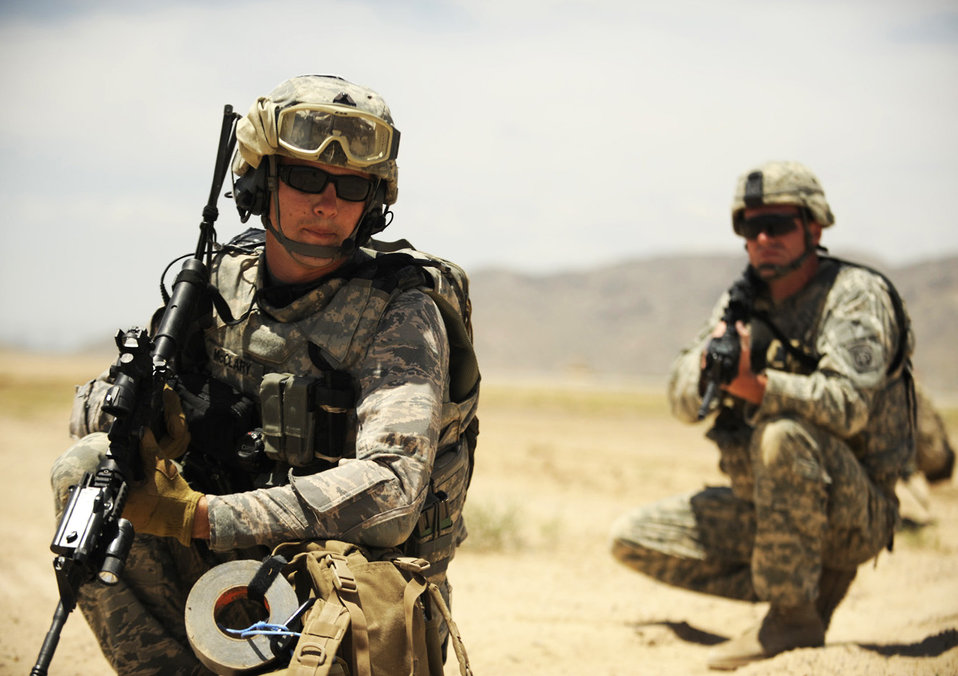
Kandahar Airmen protect servicemembers from IEDs

Staff Sgt. Ryan McCleary relays a message to Army Sgt. Mike Ridgeway during joint explosive ordnance training May 5 at Kandahar Airfield, Afghanistan. Sergeant McCleary is a 755th Explosive Ordnance Disposal technician, and Sergeant Ridgeway is an infantryman from the 82nd Airborne.